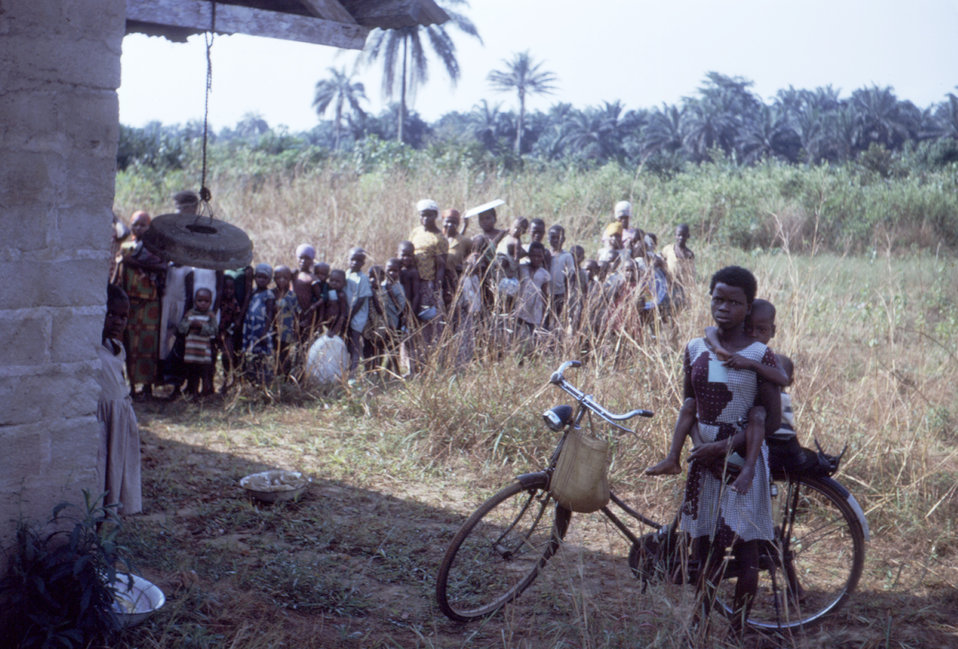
This photograph showed many Nigerian civil war refugee children who were in line to receive a food distribution. These children were examined earlier, and health officials determined that they were malnourished, and in need of food rations.